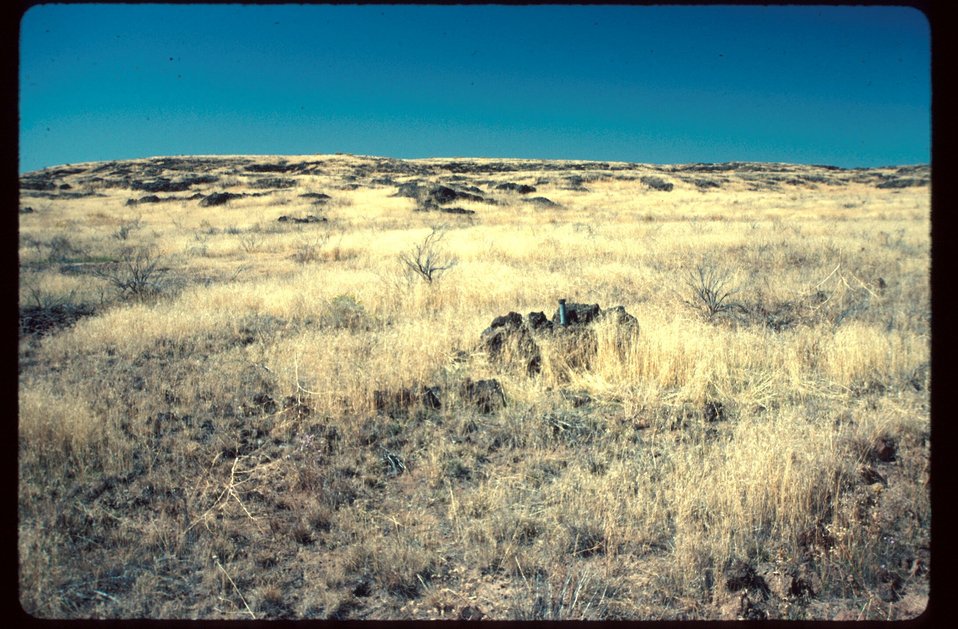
Paquri Bridge Cheatgrass Range Restoration Project Lower Snake River District